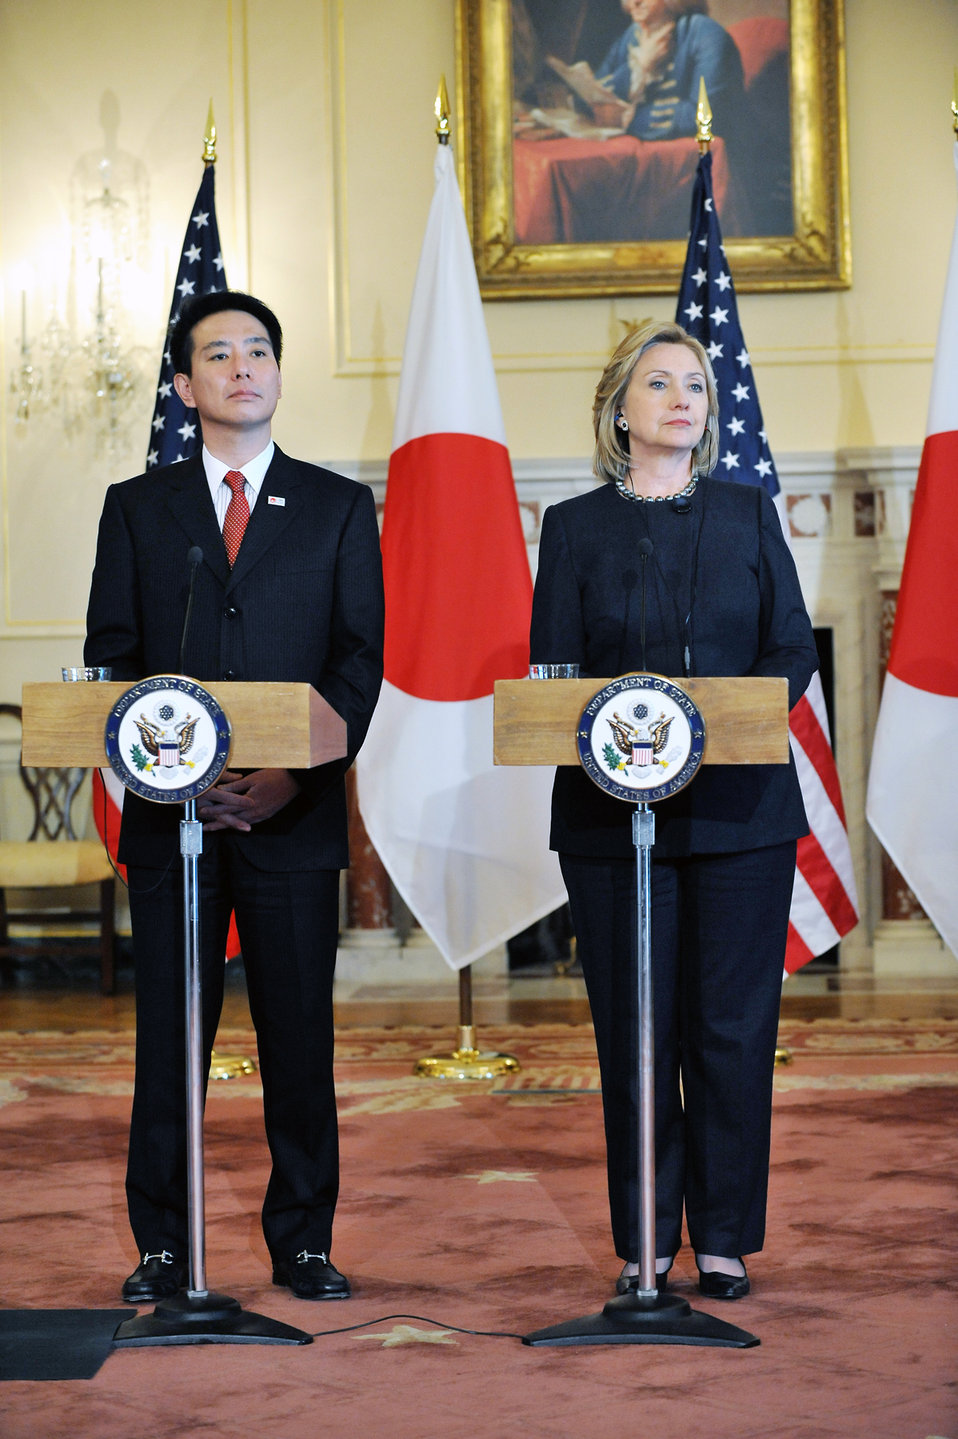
Secretary Clinton and Japanese Foreign Minister Fseiji Maehara Host a Joint Press Availability

U.S. Secretary of State Hillary Rodham Clinton and Japanese Foreign Seiji Maehara hold a joint press availability in the Benjamin Franklin Room at the U.S. Department of State in Washington, D.C., on January 6, 2010.